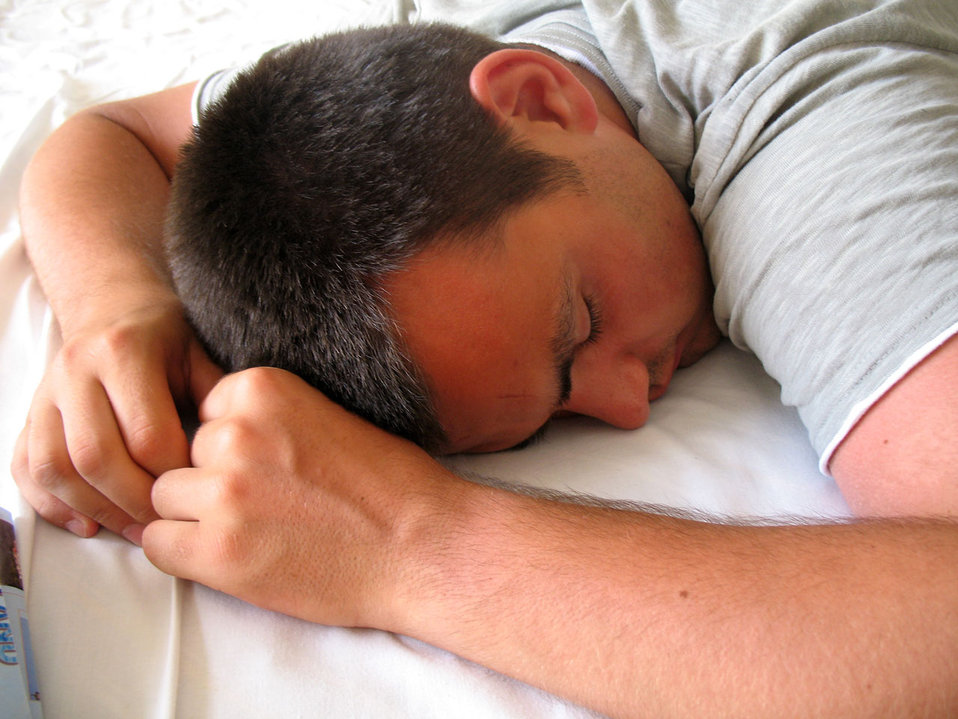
Asleep

Man asleep after a busy day.